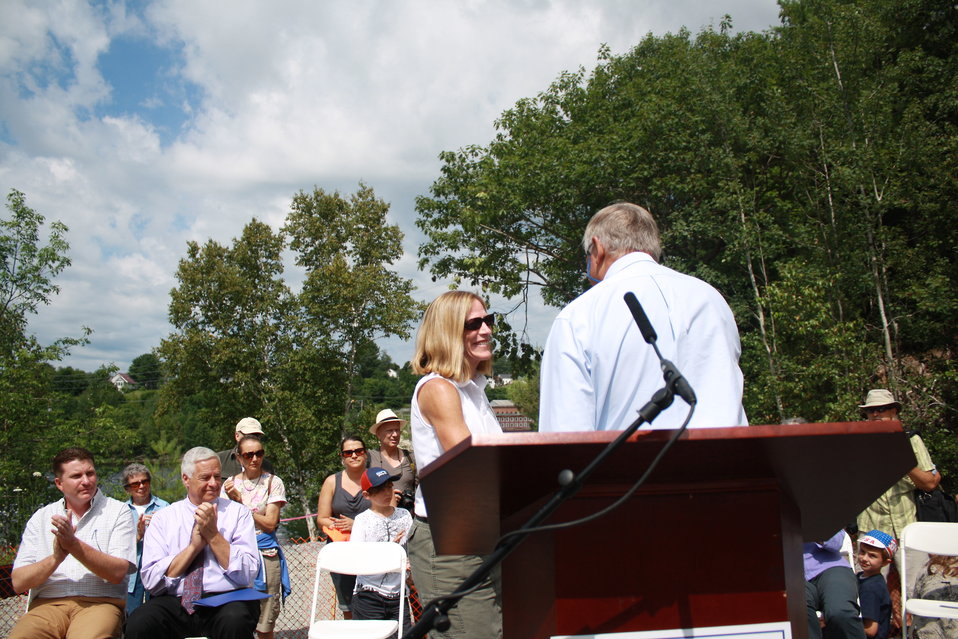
Veazie Dam Removal

John Bullard, Regional Administrator of the National Oceanic and Atmospheric Administration, introduces U.S. Fish and Wildlife Service Northeast Regional Director Wendi Weber.